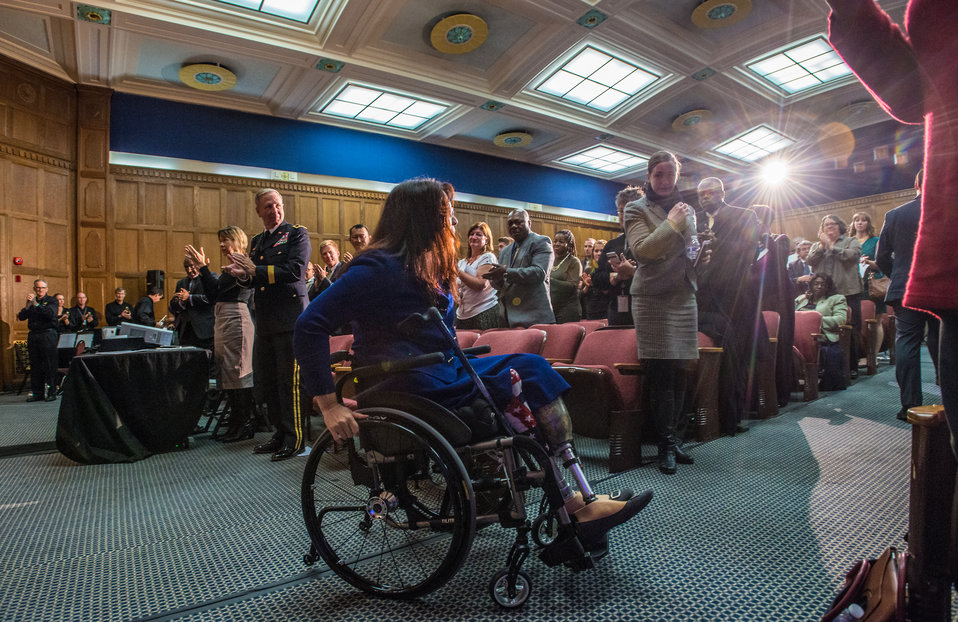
U.S. Congresswoman Tammy Duckworth (D-Ill.) receives a standing ovation for her keynote address at the 2013 U.S. Department of Agriculture (USDA), Veterans’ Day Observance, whose theme is “VALOR, COURAGE, SACRIFICE – HONORING ALL WHO SERVED,” in Washington, DC, on Wednesday, November 20, 2013. Congresswoman Tammy Duckworth is an Iraq War Veteran and former Assistant Secretary of Veterans Affairs. In 2004, Duckworth was deployed to Iraq as a Blackhawk helicopter pilot for the Illinois Army National Guard. She was one of the first Army women to fly combat missions during Operation Iraqi Freedom. Her Blackhawk helicopter was hit by an RPG (Rocket Propelled Grenade) on November 12, 2004 resulting in Duckworth losing her legs and partial use of her right arm in the explosion. She was awarded a Purple Heart for her combat injuries. Duckworth declined a military medical retirement and continues to serve as a Lieutenant Colonel in the Illinois Army National Guard.